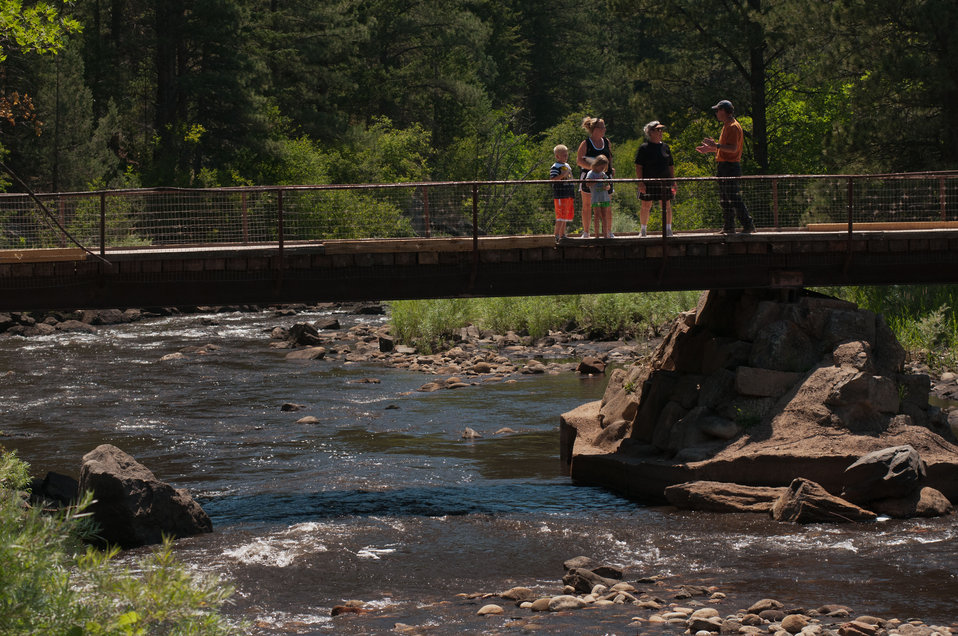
U.S. Department of Agriculture District Conservationist Todd Boldt, orange shirt, talks with Jackson, Alison and Amy Temples, and Patty Jackson, three generations of a family, walking across the bridge to see the effects of the Hewlett Gulch Fire, in the Poudre Canyon area, on Friday, July 20, 2012, near Fort Collins, Colorado. “Talking with people is one of the most important things I do. By talking with them, they will talk to maybe 50 others,“ said Todd Boldt. “Explaining the effects of the fire and the steps that the City of Greeley and USDA are doing, go a long way to educate the public.” Unmitigated runoff have turned the water in this river from clear water to nearly black water heavily laden with ash, silt, and burnt debris that recent thunderstorms have already washed down from the mountainsides. When he dug down into the riverbanks, he found ash 18 inches below the surface, at the water’s edge. At its peak more than 400 firefighters were battling fires pushed by 50 mph winds. When the last embers were cooled, more than 12-square miles lay blacked at a cost of approximately 3.2 million dollars to fight. The aerial distribution of straw has successfully kept nearby Seaman Reservoir clean for the drinking water of the City of Greeley. Forest Service lands receive straw, while private and other lands receive a seed mix and straw to promote ground cover plant growth on ash-covered lands. In total, 1,800 tons of straw will be applied during the 14-day operation. One quarter of the cost was paid by the City of Greeley and the U.S. Department of Agriculture funded the remainder.